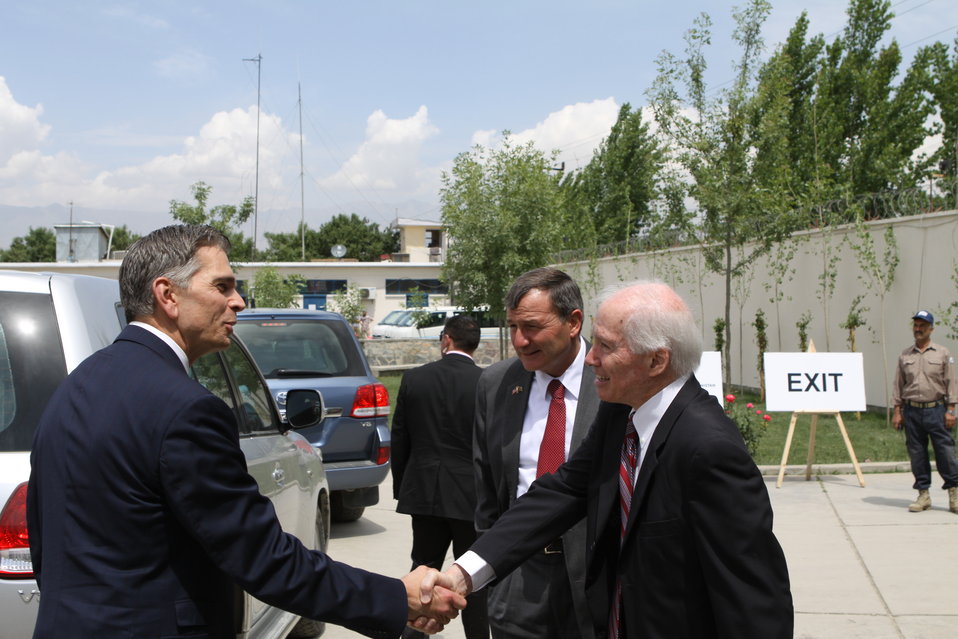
100526 AUAF Graduation 012